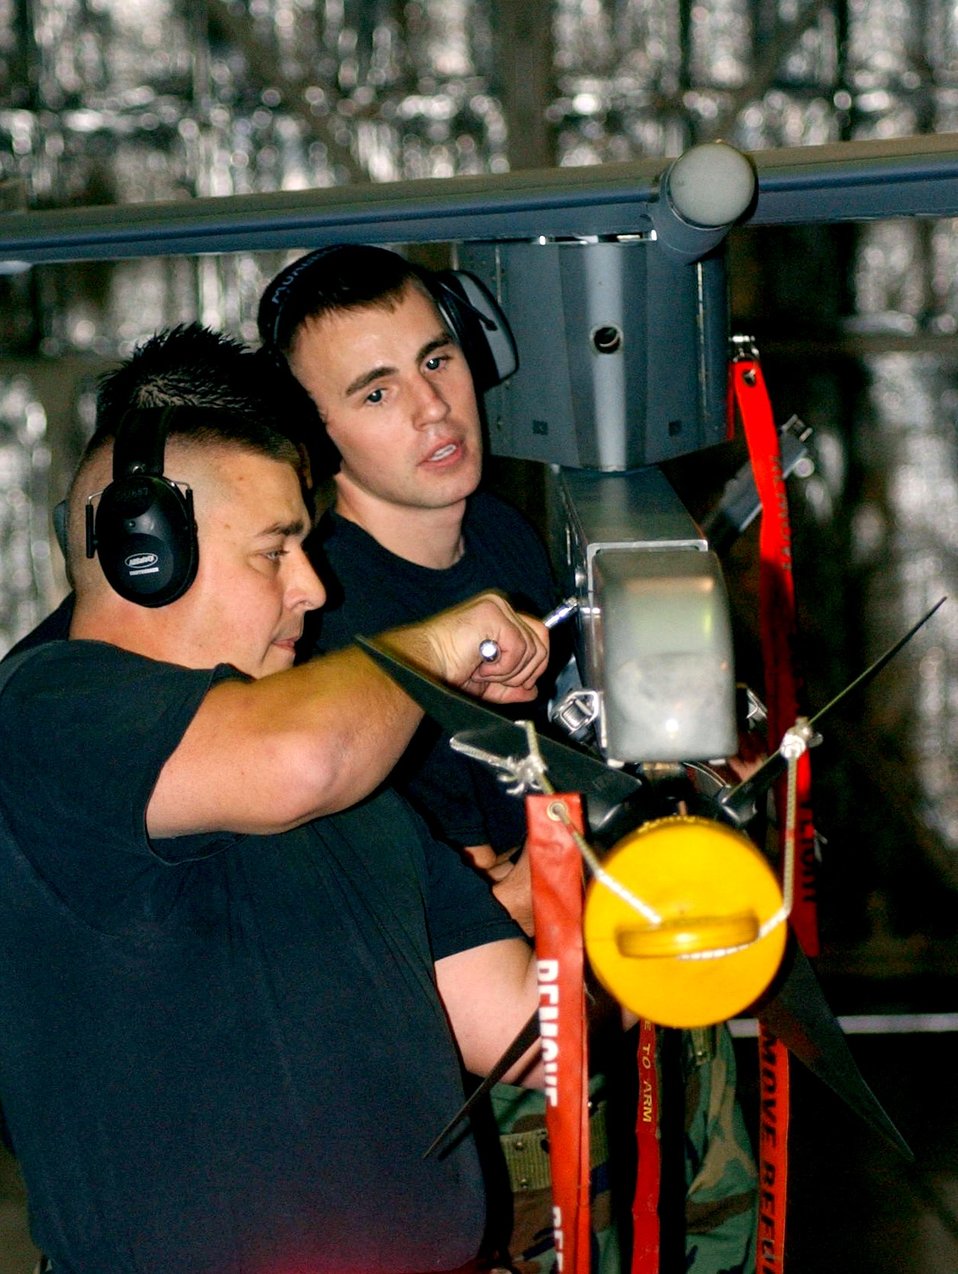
Lock and load

MISAWA AIR BASE, Japan -- Staff Sgt. Brandon Williams (left) and Senior Airmen Juan Reyes (partially hidden) and Eric Windsor load an AIM-9 missile onto an F-16 Fighting Falcon's missile launcher during a competition here Dec. 7. The three-person team competed to determine the base's best load crew. Teams are inspected for overall knowledge, performance, and dress and appearance.